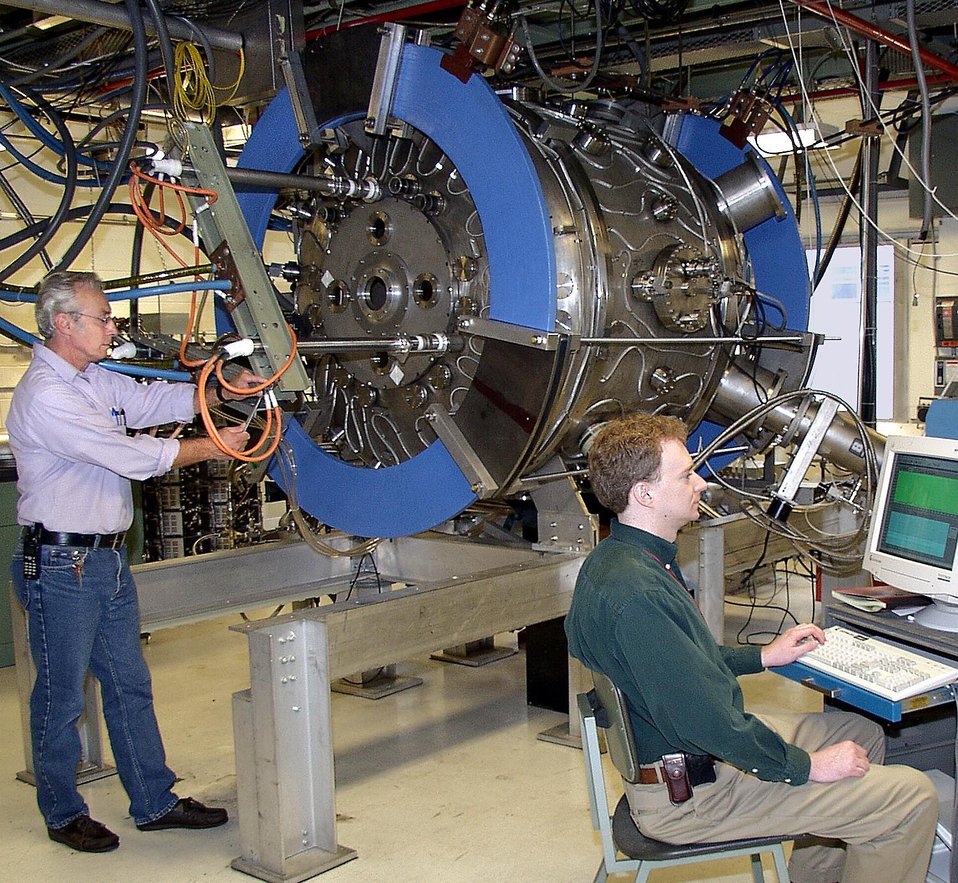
THE MAGNETIC RE-CONNECTION EXPERIMENT (MRX) DEVICE AT THE PRINCETON PLASMA PHYSICS LABORATORY.

MAGNETIC RECONNECTION IS THE BREAKING AND TOPOLOGICAL REARRANGEMENT OF MAGNETIC FIELD LINES IN PLASMAS. IT IS ONE OF THE MOST FUNDAMENTAL PROCESSES OF PLASMA PHYSICS AND HAS IMPORTANT RELEVANCE TO FUSION RESEARCH, AS WELL AS TO THE PHYSICS OF THE EARTH'S MAGNETOSPHERE AND SOLAR FLARES. IT MAY ALSO PLAY A KEY ROLE IN HEATING THE PLASMA IN THE SOLAR ATMOSPHERE, OR SOLAR CORONA.